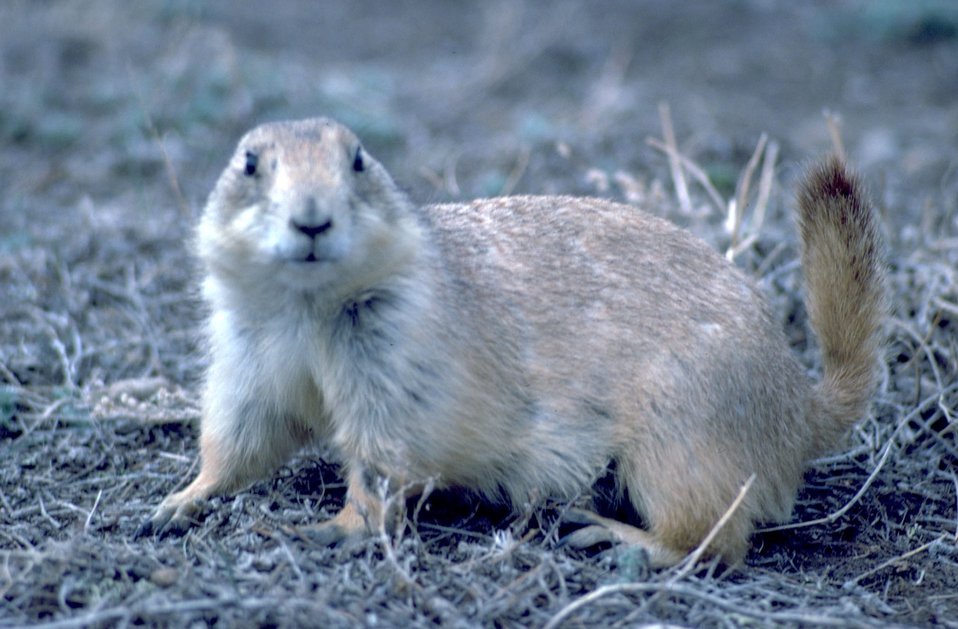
Prairie Dog